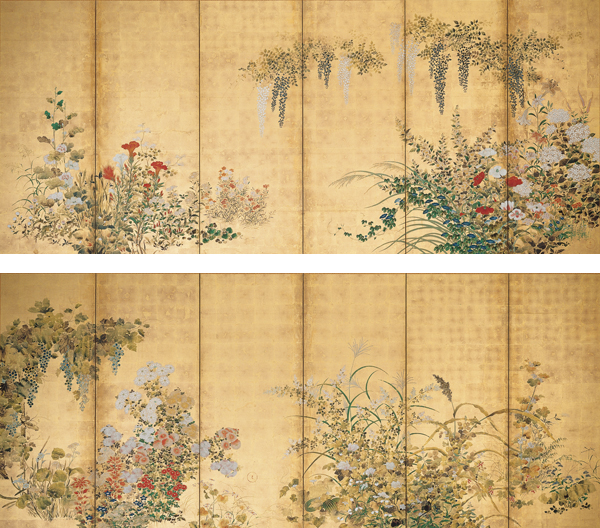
'Spring and Autumn Flowers, Fruits, and Grasses', 18th century, Japan, Edo period, Pair of six-fold screens